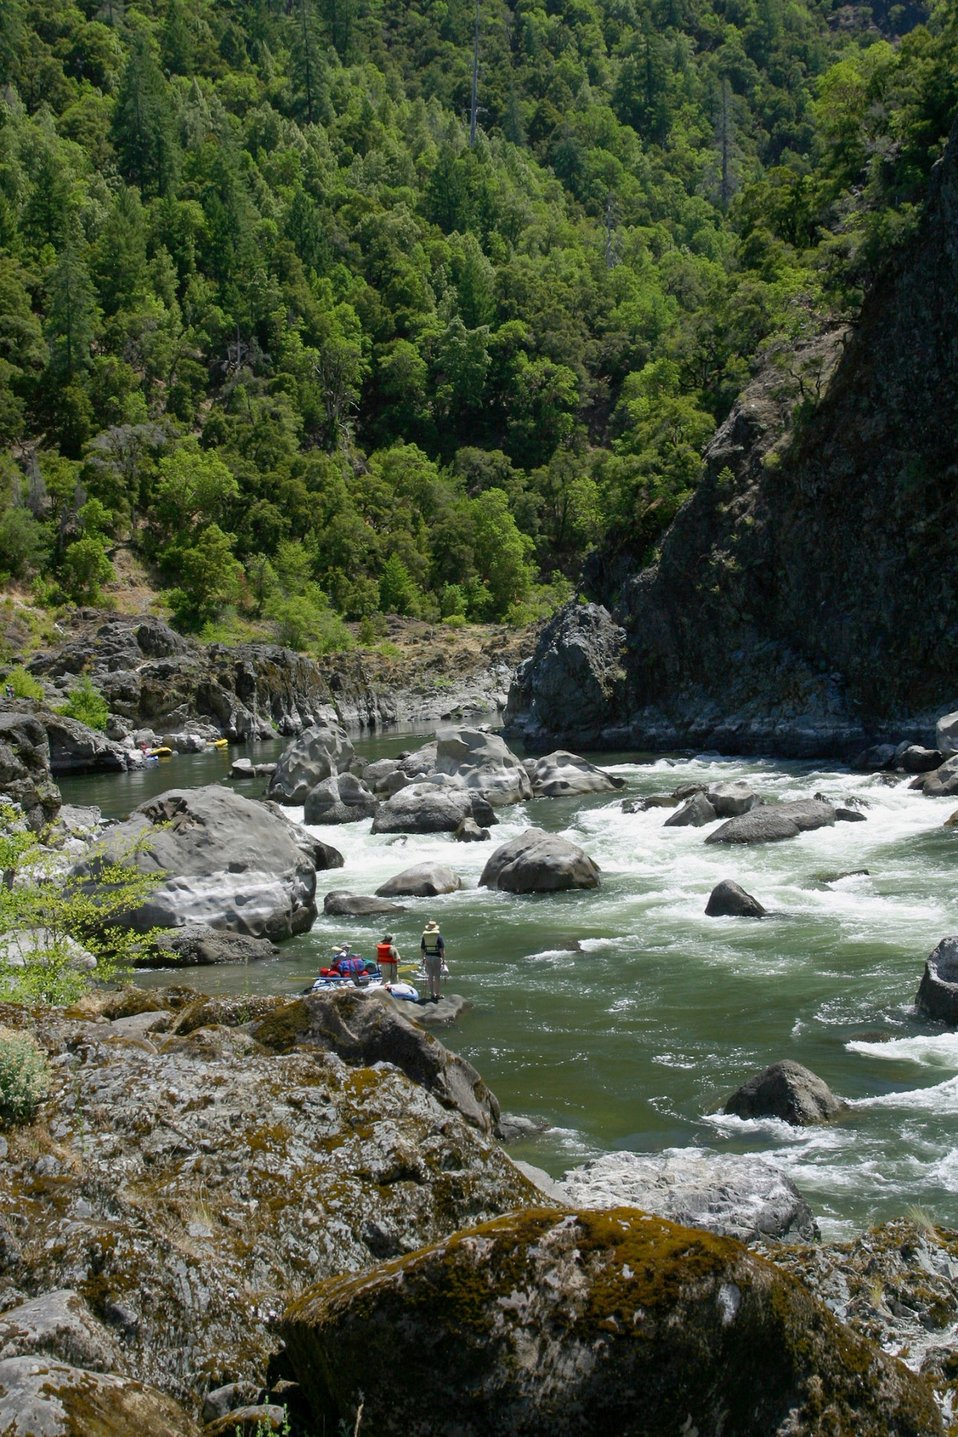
Blossom Rapids.